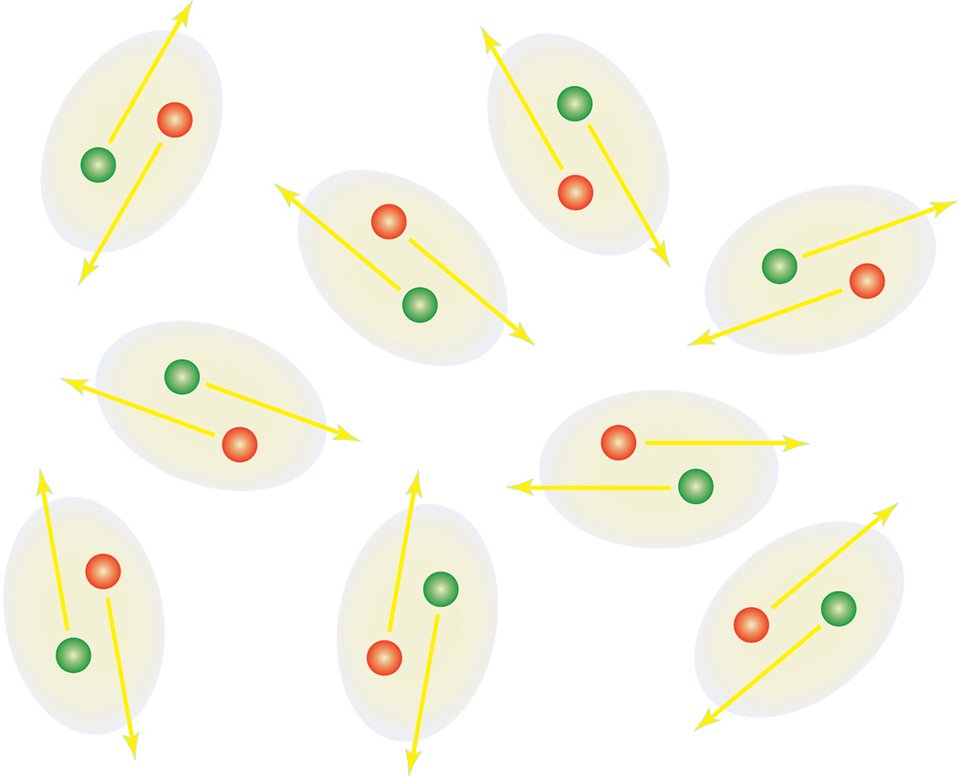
Supersolid

Artistic rendition of a counterflow superfluid state. In this type of superfluid the motion of one type of atom is perfectly matched with an atom of the other type moving in the opposite direction.